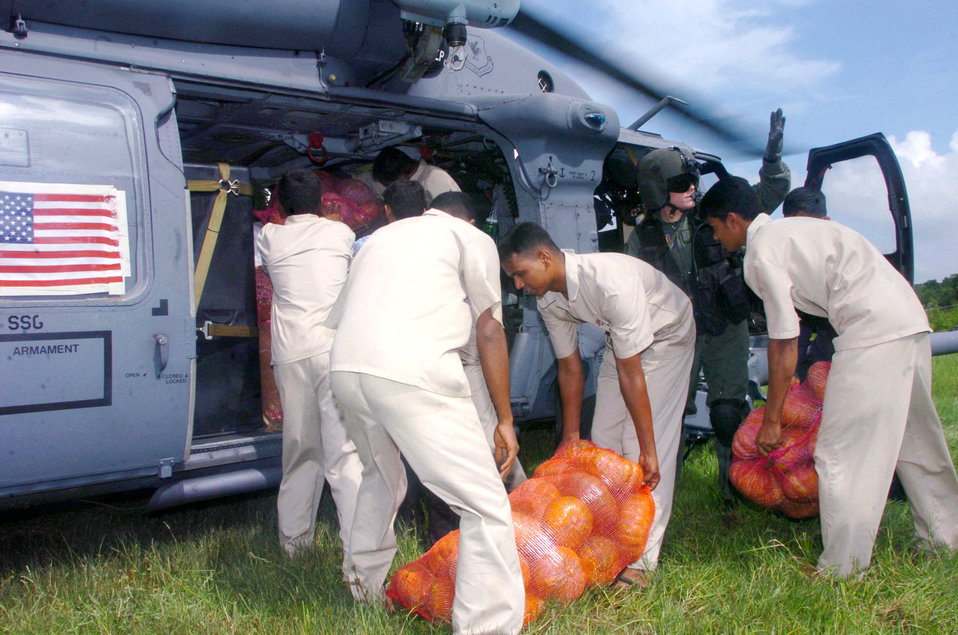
Kadena Airmen help Sri Lanka tsunami victims

DAMBULA, Sri Lanka -- Airman 1st Class Emily Starcher helps Sri Lankan relief workers unload vegetables from an HH-60G Pave Hawk helicopter during an Operation Unified Assistance mission here. She is a flight engineer assigned to the 33rd Rescue Squadron at Kadena Air Base, Japan. The Kadena Airmen are helping bring food, medicines and supplies to people affected by the Dec. 26 tsunamis.